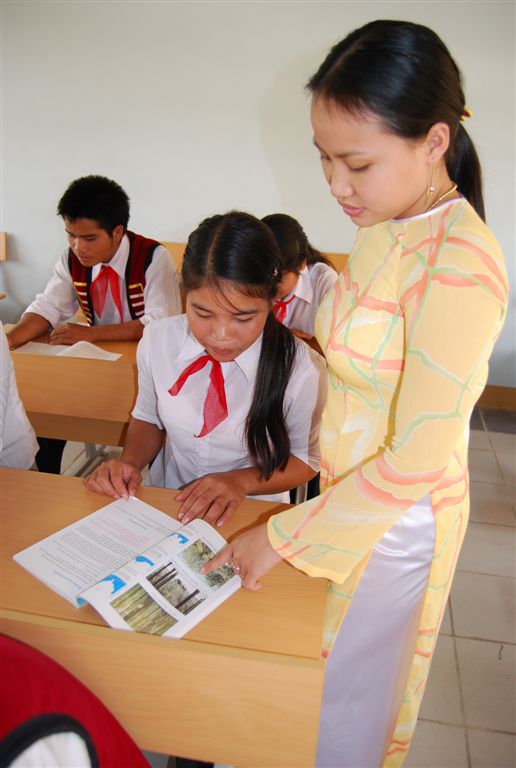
A teacher explains a lesson at the Kon Ray school.